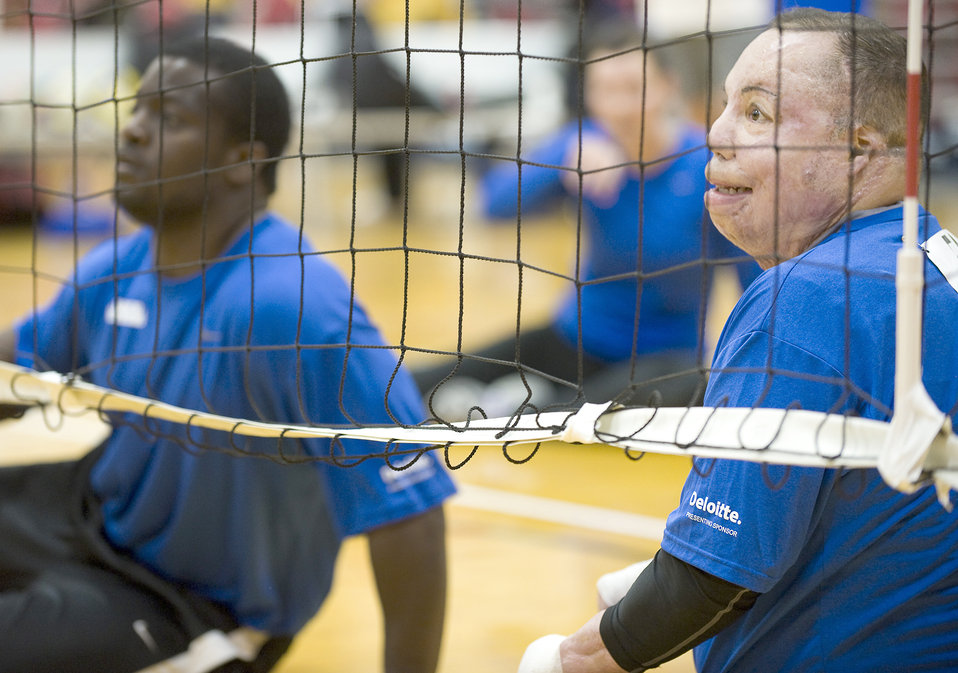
Air Force volleyball team remains undefeated

Staff Sgt. Elmer Sanders (left) and Tech. Sgt. Israel Del Toro wait for the Army team to serve the ball May 11, 2011 at the Olympic Training Center, Colorado Springs. The Air Force went on to win the game proceeding to the next round. The Warrior Games competition began May 10 and finishes on May 14, 2010 at the U.S. Olympic Training Center in Colorado Springs.